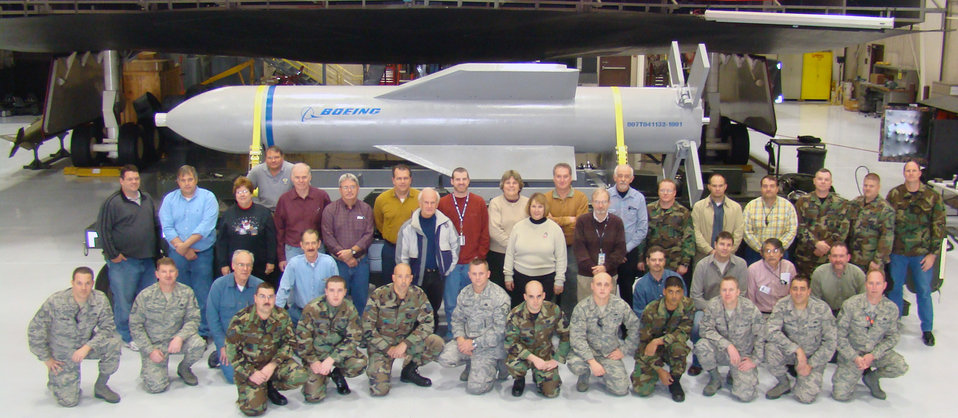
30,000-pound bomb reaches milestone

Weapon specialists gather in front of a mock up of the Massive Ordnance Penetrator and the B-2 weapons load trainer Dec. 18 at Whitman Air Force Base, Mo. The MOP is approximately 20.5 feet long, with a 31.5-inch diameter and a total weight of slightly less than 30,000 pounds. The weapon will carry over 5,300 pounds of explosive material and will deliver more than 10 times the explosive power of its predecessor, the BLU-109. It is designed to penetrate up to 200 feet underground before exploding.